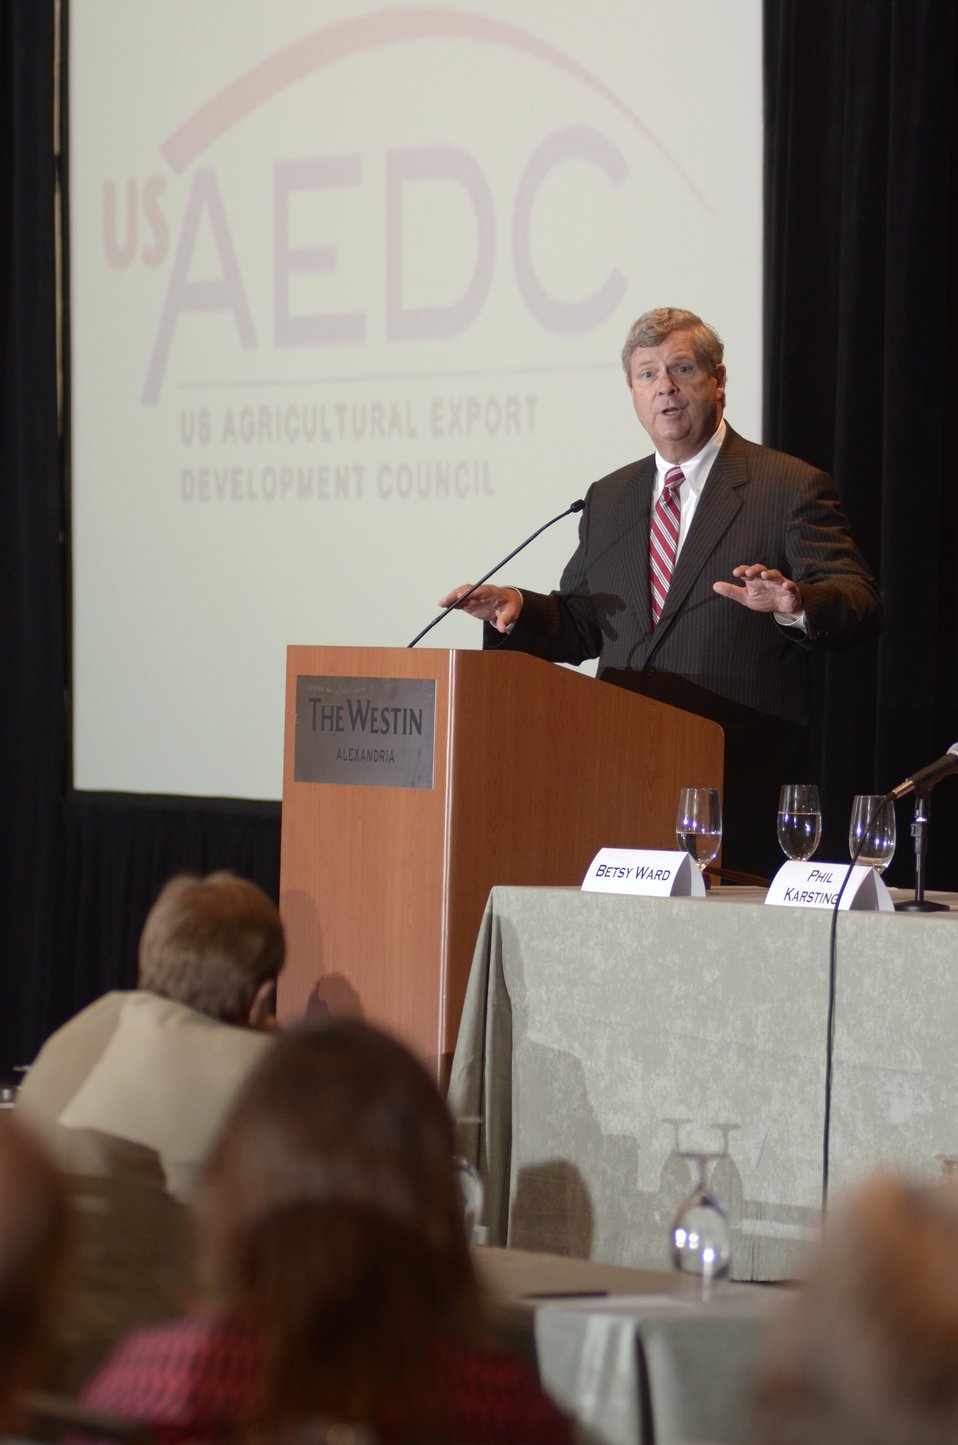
Agriculture Secretary Tom Vilsack presents keynote remarks at the U.S. Agricultural Export Development Council (USAEDC) Attaché Seminar, at the Westin Alexandria, in Alexandria, VA, on Wednesday, July 10, 2013. USAEDC is a non-profit private sector trade association that provides an exchange and coordination of information to promote the export of the products of U.S. agriculture. Their membership includes U.S. commodity trade associations, farmer cooperatives and state regional trade groups from around the country. In the interest of U.S. agricultural growers and producers their export promotion efforts, work in conjunction with the U.S. Department of Agriculture Foreign Agricultural Service.